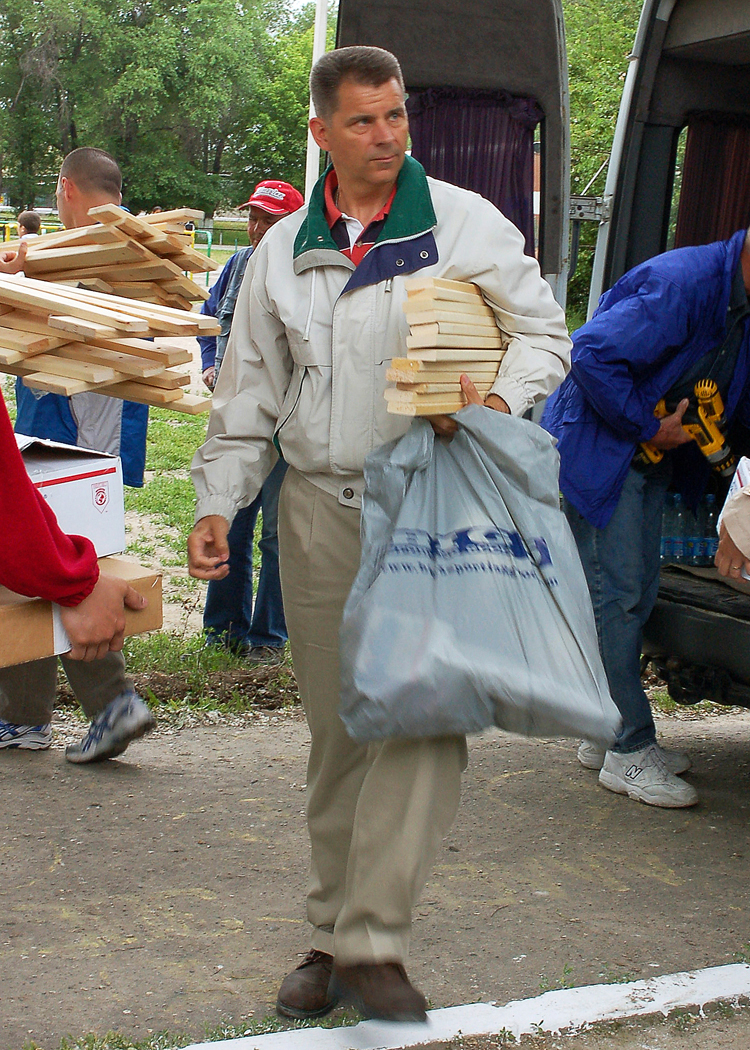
Stateside donations give Kyrgyz students tools of art trade

Col. Gerard Caron carries art supplies to the Manas Village School in Kyrgyzstan. 376th Expeditionary Medical Group members from Manas Air Base, Kyrgyzstan, delivered handmade art easels and art supply donations to the school in May. Colonel Caron is 376th EMDG commander and is deployed from the Air Education and Training Command at Randolph Air Force Base, Texas.